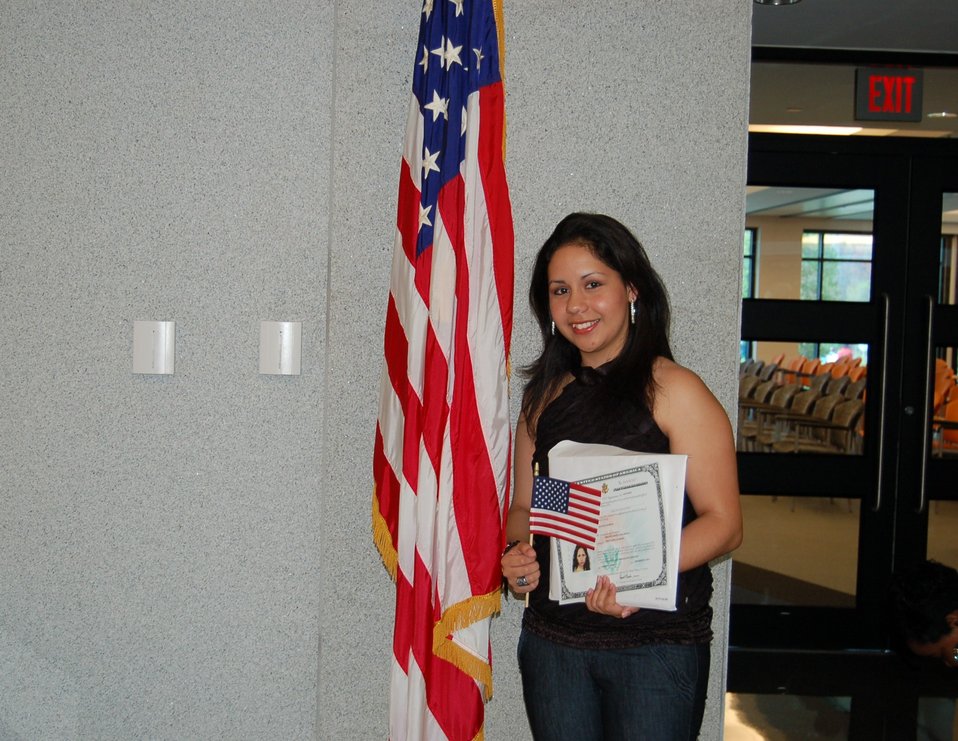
New Citizens